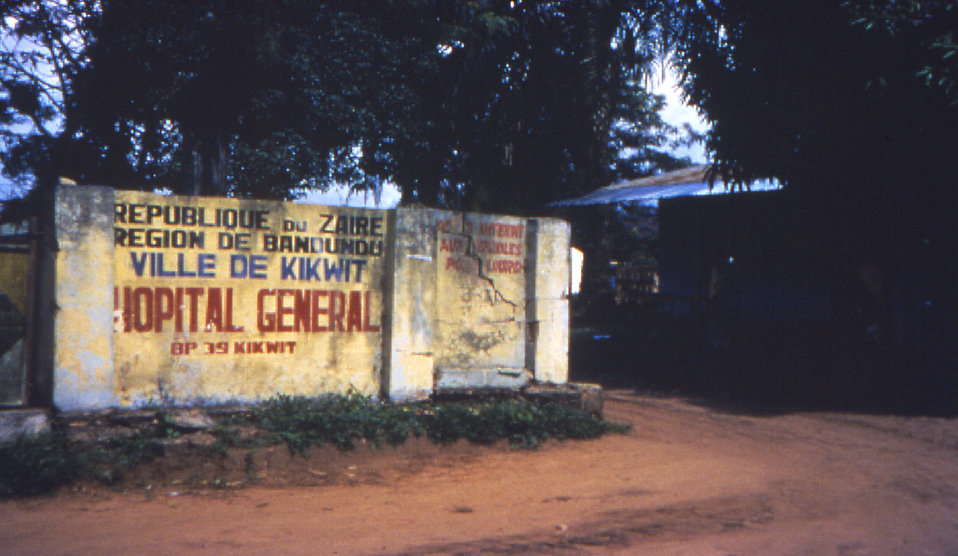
This photograph depicted the entrance of the Kikwit General Hospital, which was photographed during the a 1995 Ebola outbreak in what was formerly Kikwit, Zaire, and is now known as the Democratic Republic of the Congo.